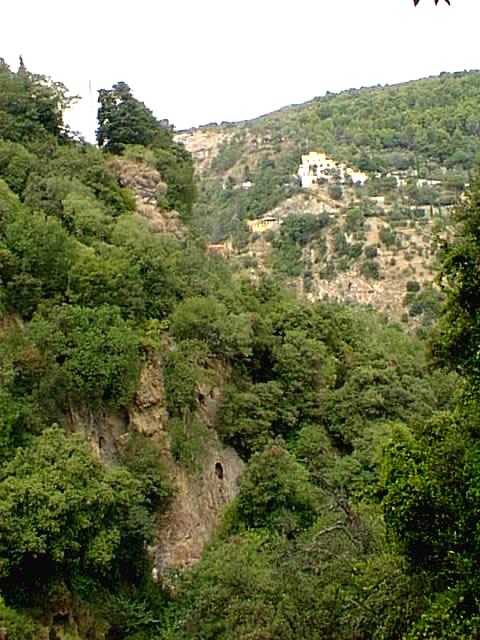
Da villa gregoriana 1 990820